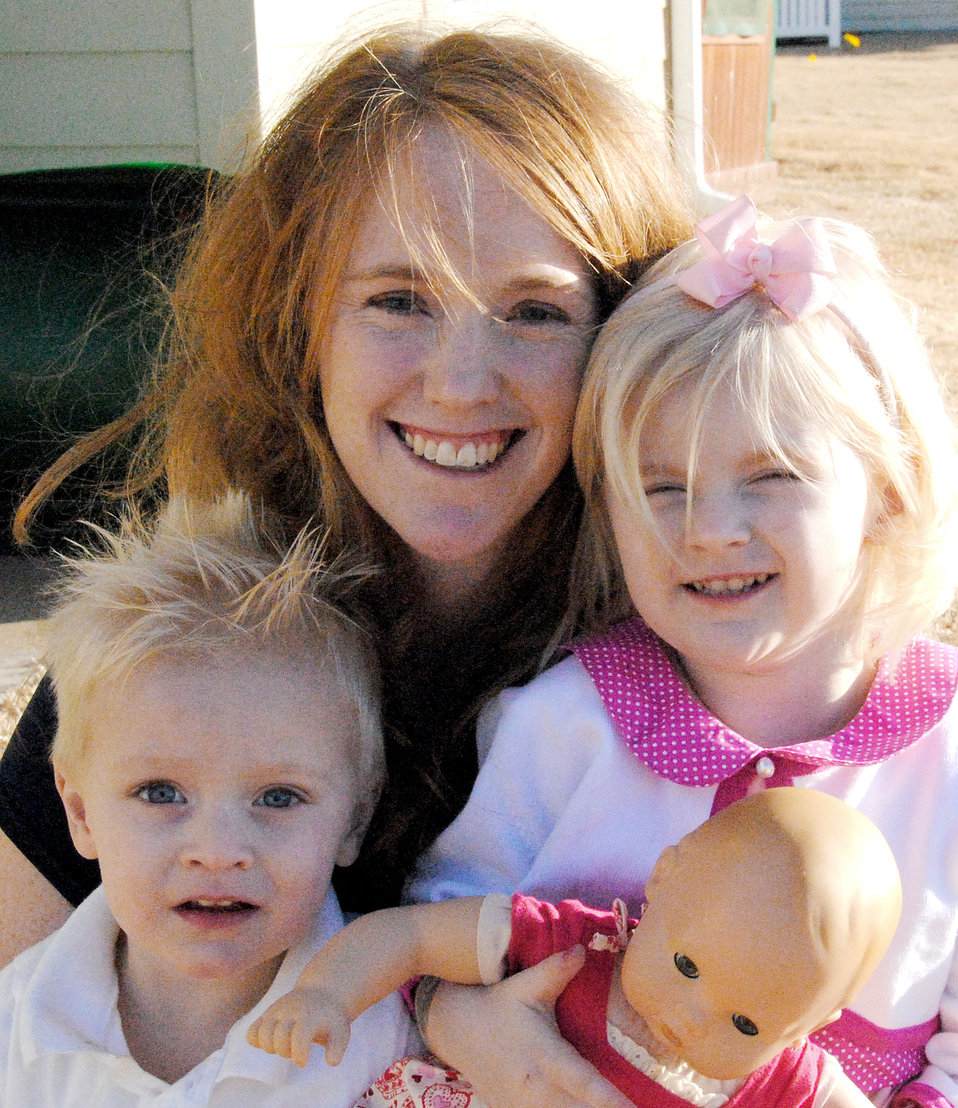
2009 Key Spouse of the Year

Jennifer Block is the Air Education and Training Command's 2009 Key Spouse of the Year. She is the mother of Alexus, right, and Marcus, and is the wife of Capt. Beau Block, an instructor pilot with the 33rd Flying Training Squadron at Vance Air Force Base, Okla.